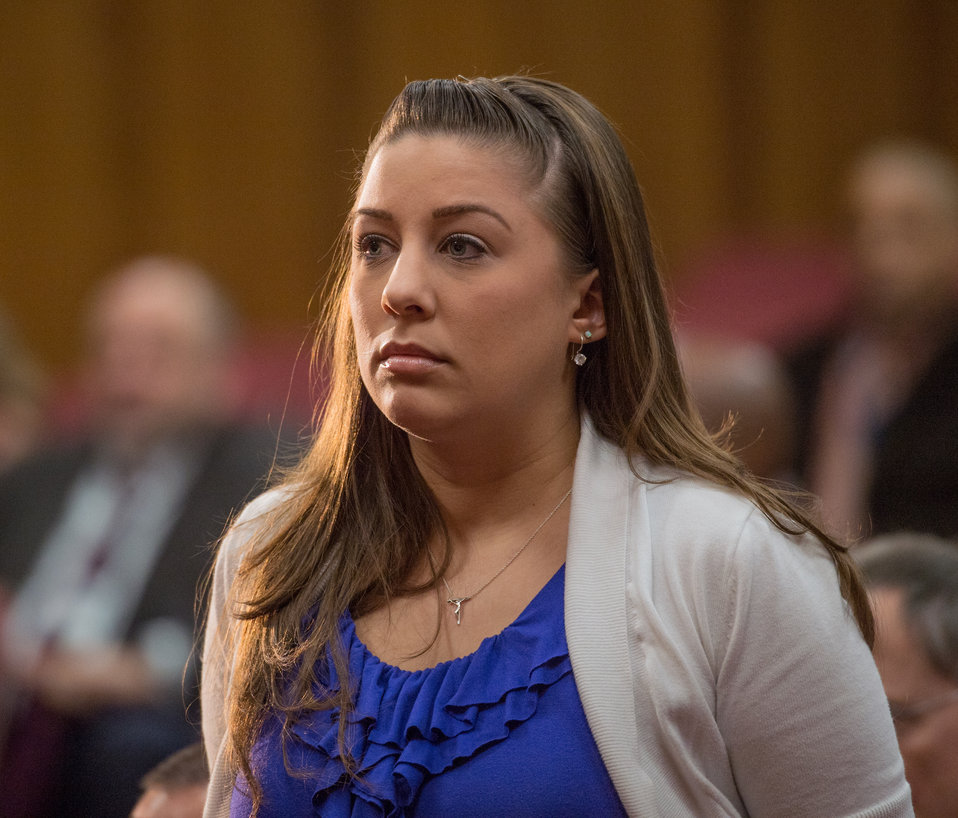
U.S. Department of Agriculture (USDA) personnel who have served, or are serving in a Uniformed Armed Service are called by their past or present Service to stand and be honored with the singing of each of the major Service songs sung by soprano Amy Keesun Kwon, during the 2013 USDA Veterans’ Day Observance, whose theme is “VALOR, COURAGE, SACRIFICE – HONORING ALL WHO SERVED,” in Washington, DC, on Wednesday, November 20, 2013.